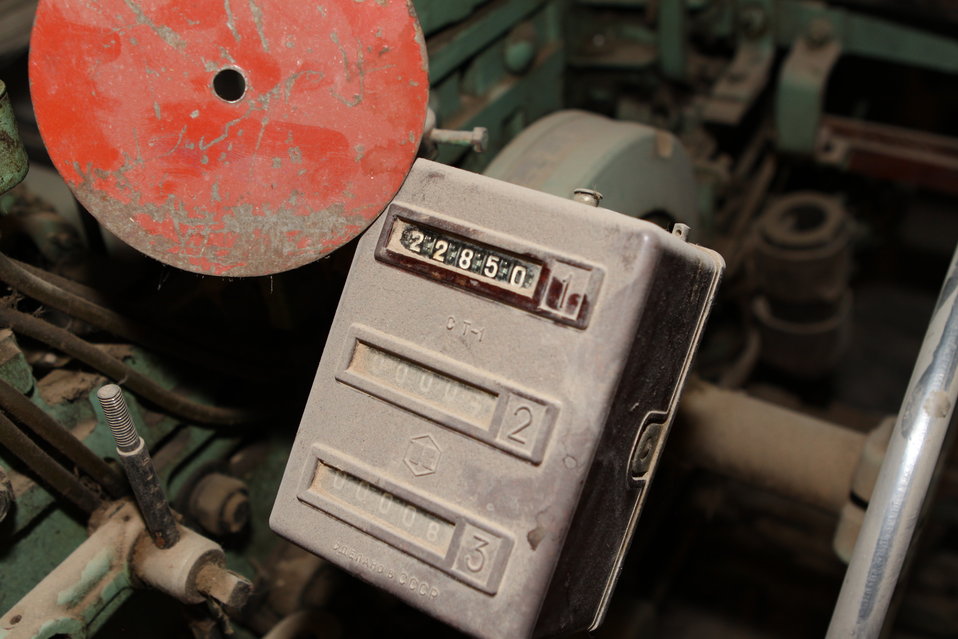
100525 Hirat Textile Company 740